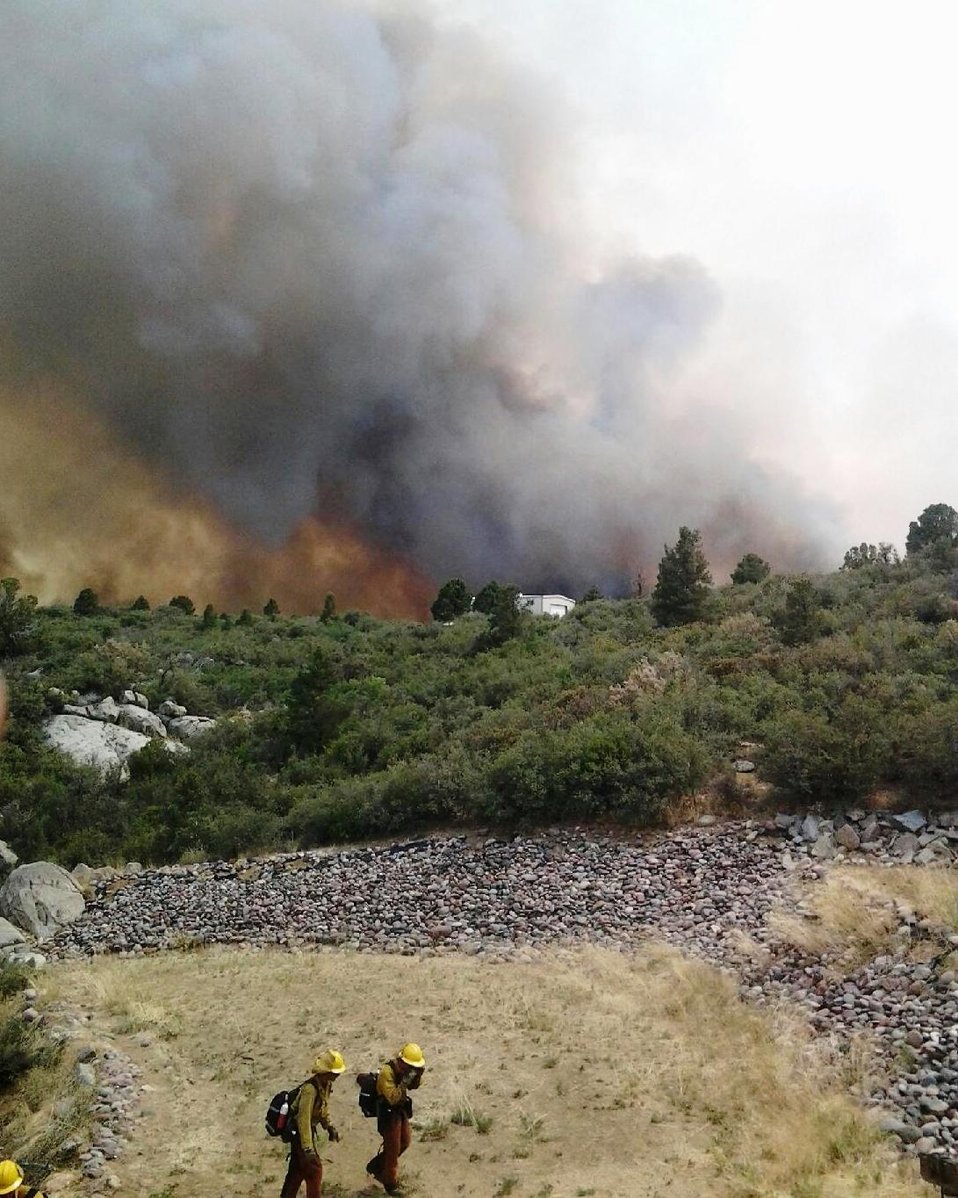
The Yarnell Fire began on Jun. 28, 2013 from a lightning strike and is approximately 1.5 miles from Yarnell, AZ.